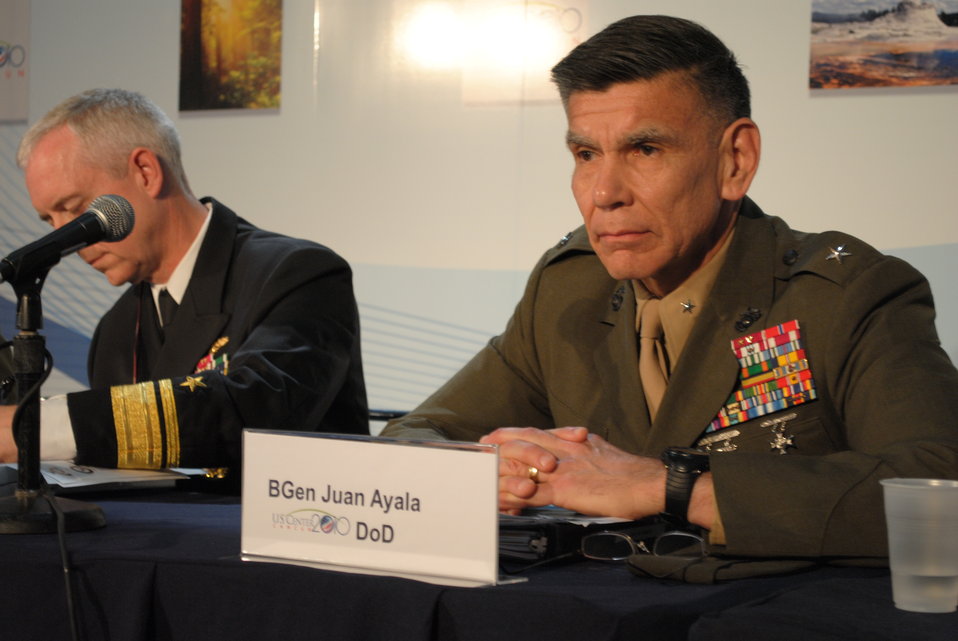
Brigadier General Ayala Responds to a Question

Brigadier General Juan Ayala responds to a question from the audience during the panel, National Security Implication on Climate Change, sponsored by the U.S. Department of Defense at the U.S. Center at COP-16 in Cancun, Mexico, on December 9, 2010.